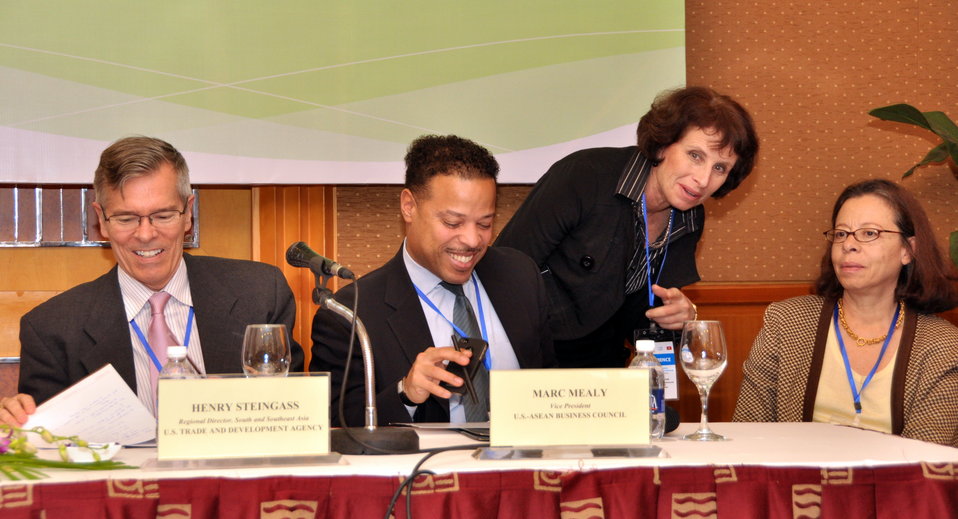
Press Conference at the LMI Infrastructure Best Practices Exchange

January 14, 2013